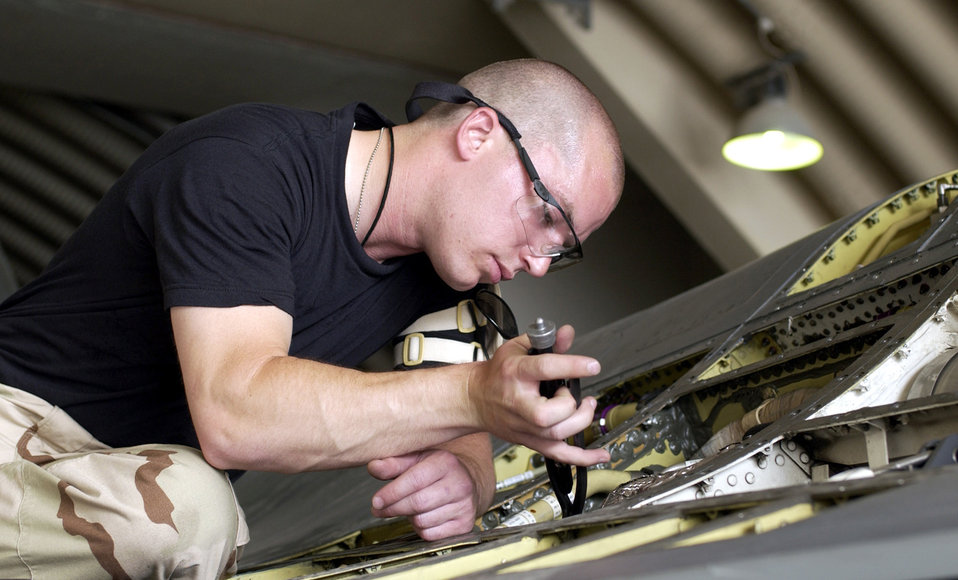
Getting wired

SOUTHWEST ASIA -- Senior Airman James Flinchbaugh works on the safety wiring heat shield on an F-16 Fighting Falcon at a forward-deployed location. He is assigned to the 379th Expeditionary Maintenance Squadron and is deployed from the Vermont Air National Guard's 158th Fighter Wing.